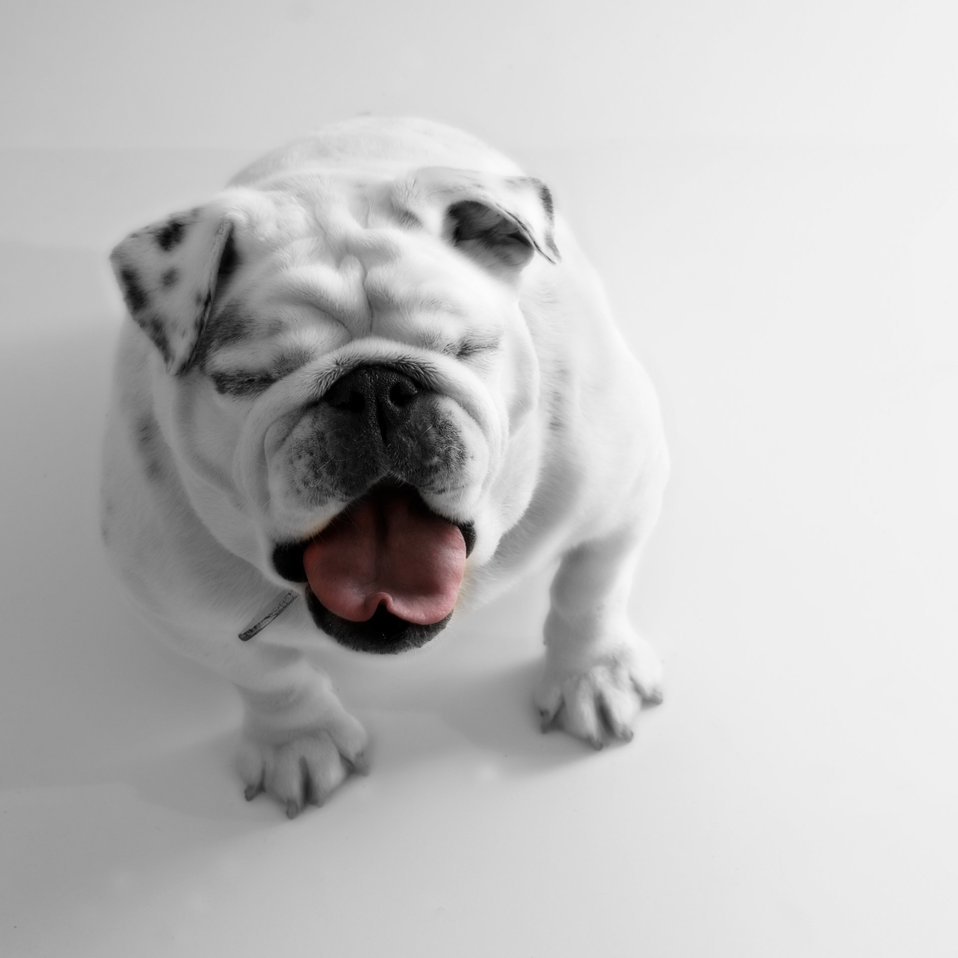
Mia

White bulldog.